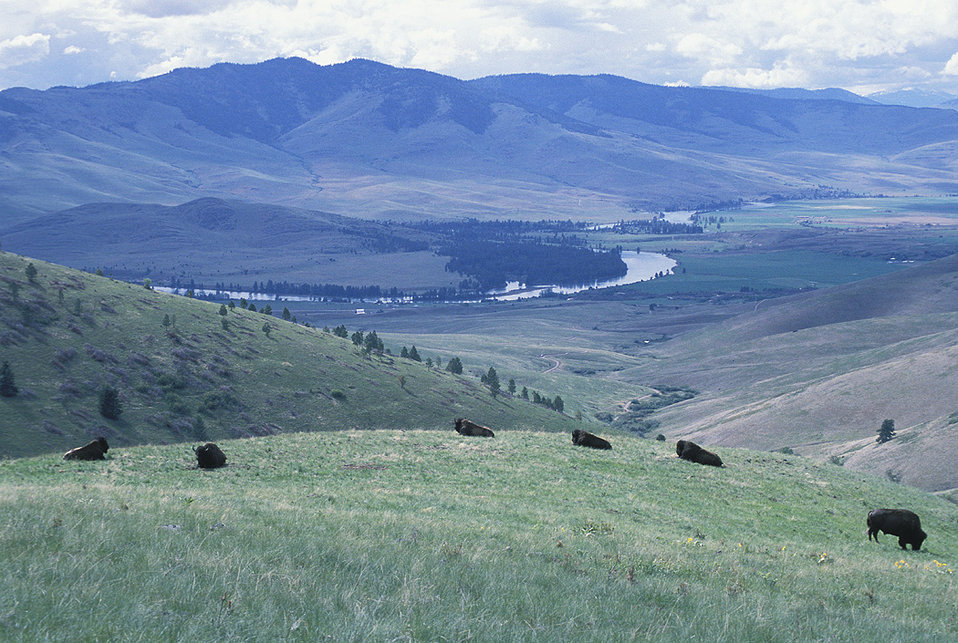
Bison at the National Bison Range

Five bison part of a larger herd lying down on a grassy slope at the National Bison Range in Moiese, Montana.